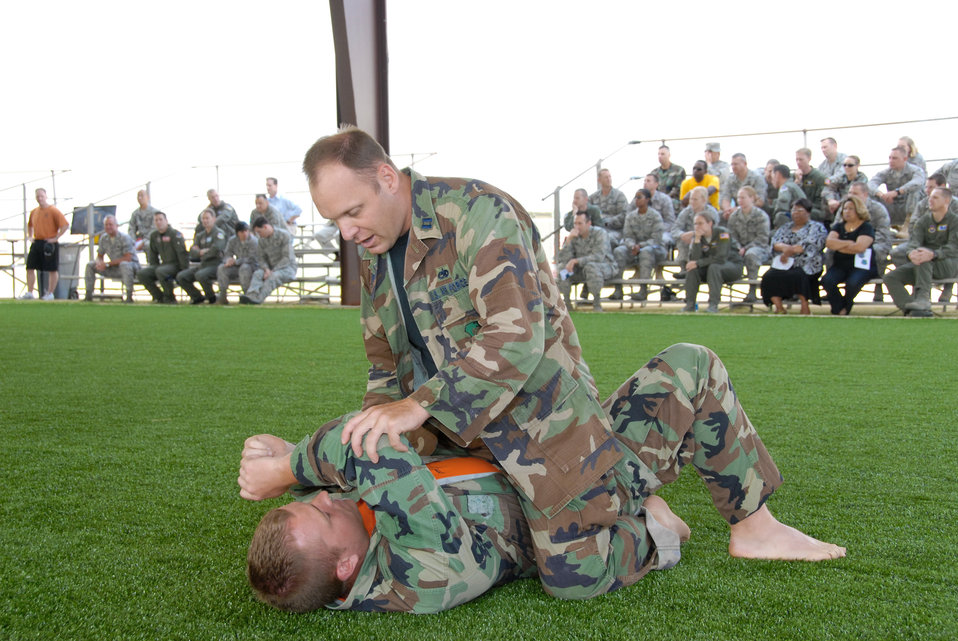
New facilty gives junior officers space to learn self-defense

Capt. Michael Thompson demonstrates combatives training at the new Expeditionary Training Complex May 1 at Maxwell Air Force Base, Ala. Captain Thompson is assigned to the 37th Student Squadron Air and Space Basic Course.